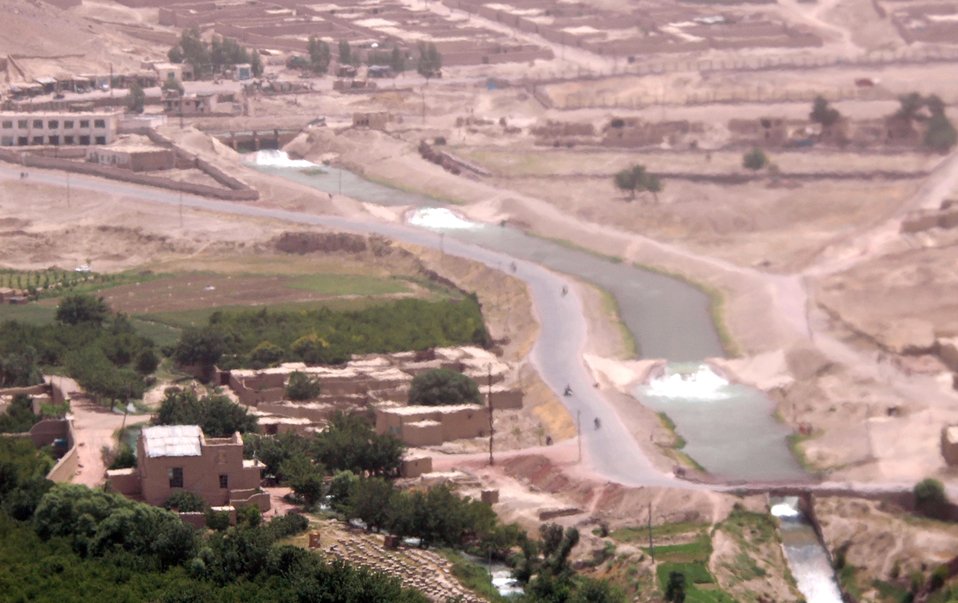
CODEL Berman